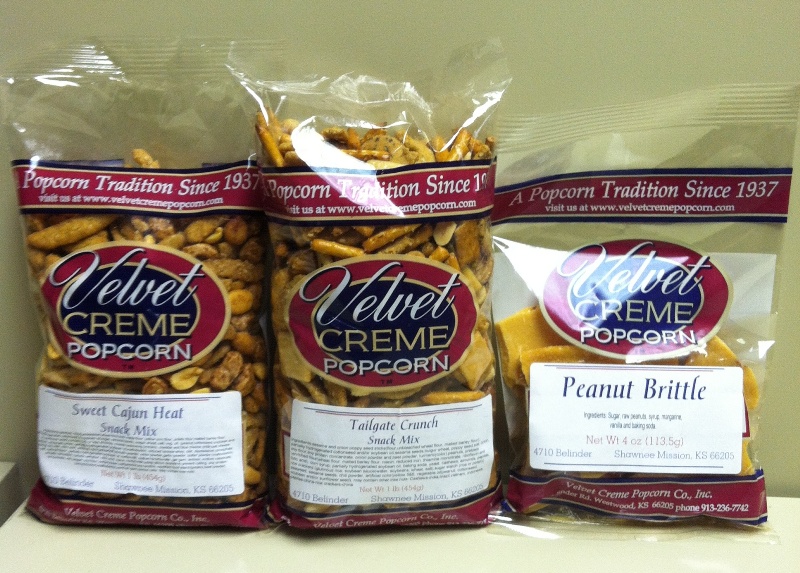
RECALLED – Snack Products

December 15, 2011 – Product Recall – Velvet Creme Popcorn Co. Issues Allergy Alert On Undeclared Milk, Soy, And Wheat In Products.